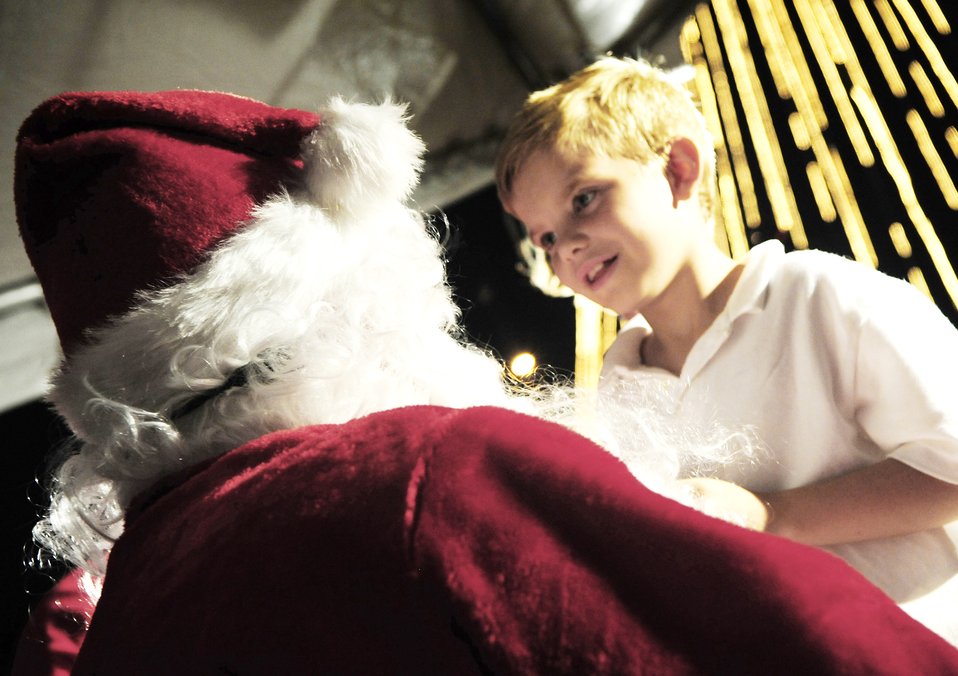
I promise, I've been good

Jack Phillips, 7, tells Santa Claus what he wants for Christmas this year during the annual tree lighting ceremony at MacDill Air Force Base, Fla., Dec. 2, 2009. Families from the community gathered for the holiday spirit, and had an opportunity to visit Santa. Jack is the nephew of Ryan Brown who works at U.S. Special Operations Command.